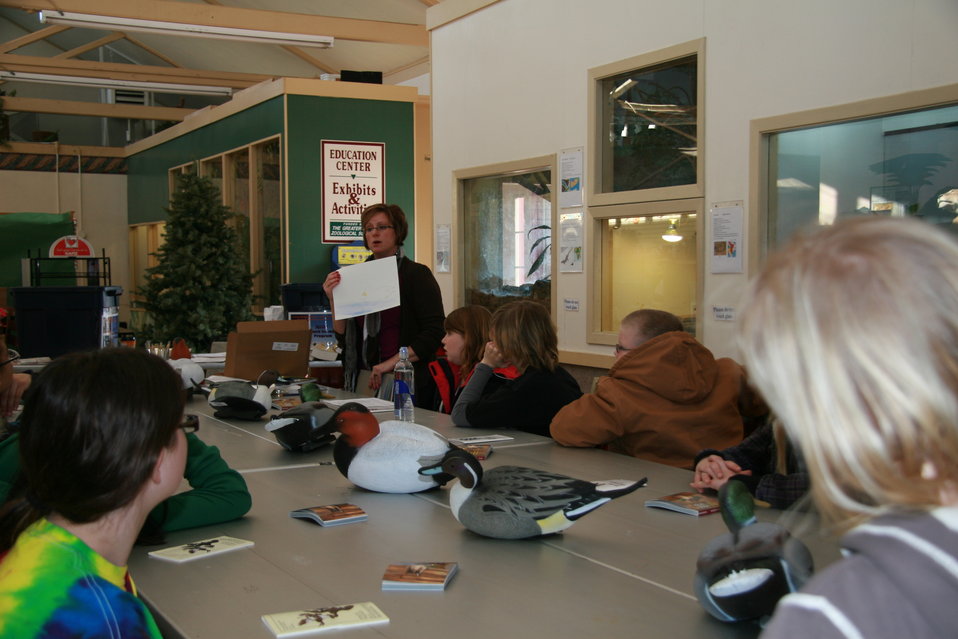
North Dakota Junior Duck Stamp - Learning Art Techniques

Jane Kalmbach of Kenmare, ND - teaching particpants about some basic art techniques. The Roosevelt Park Zoo on Minot, ND kindly let us use their facilities to hold the program.